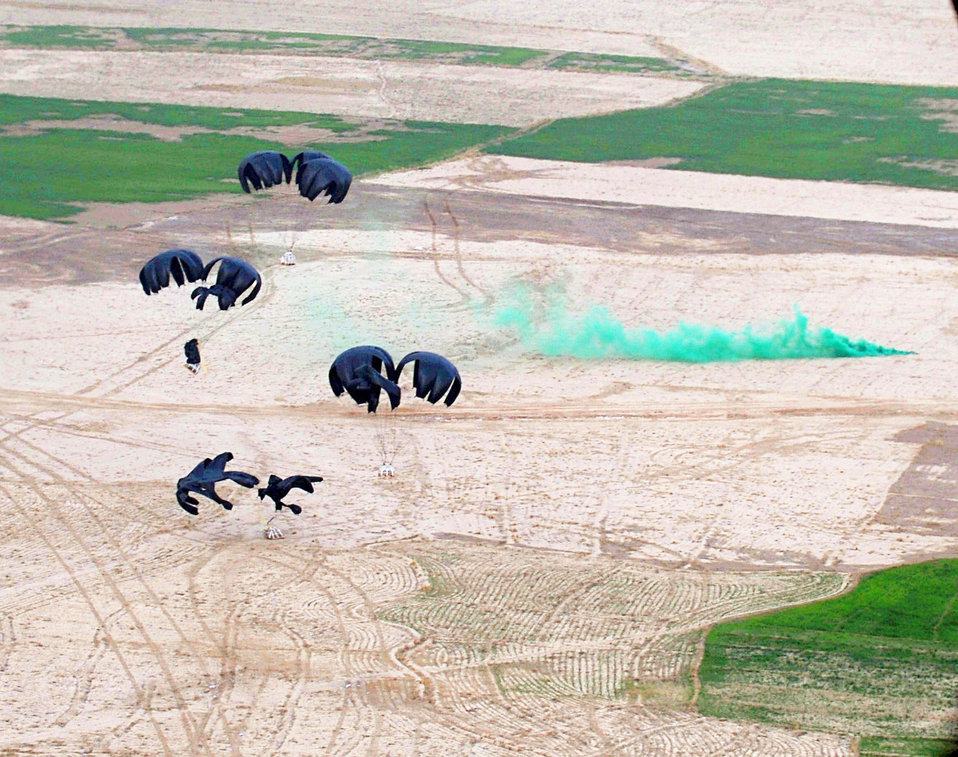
C-130 low-cost, low-altitude combat airdrops now operational

Four low-cost low-altitude resupply bundles are airdropped from a C-130 Hercules Feb. 6, 2010, in Afghanistan.